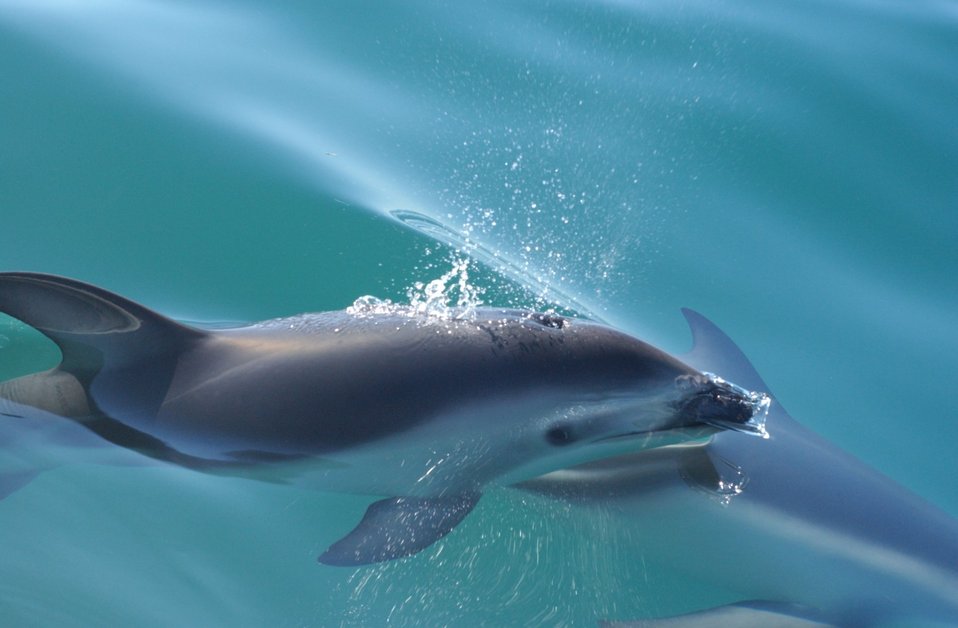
Dusky dolphin (Lagenorhynchus obscurus)